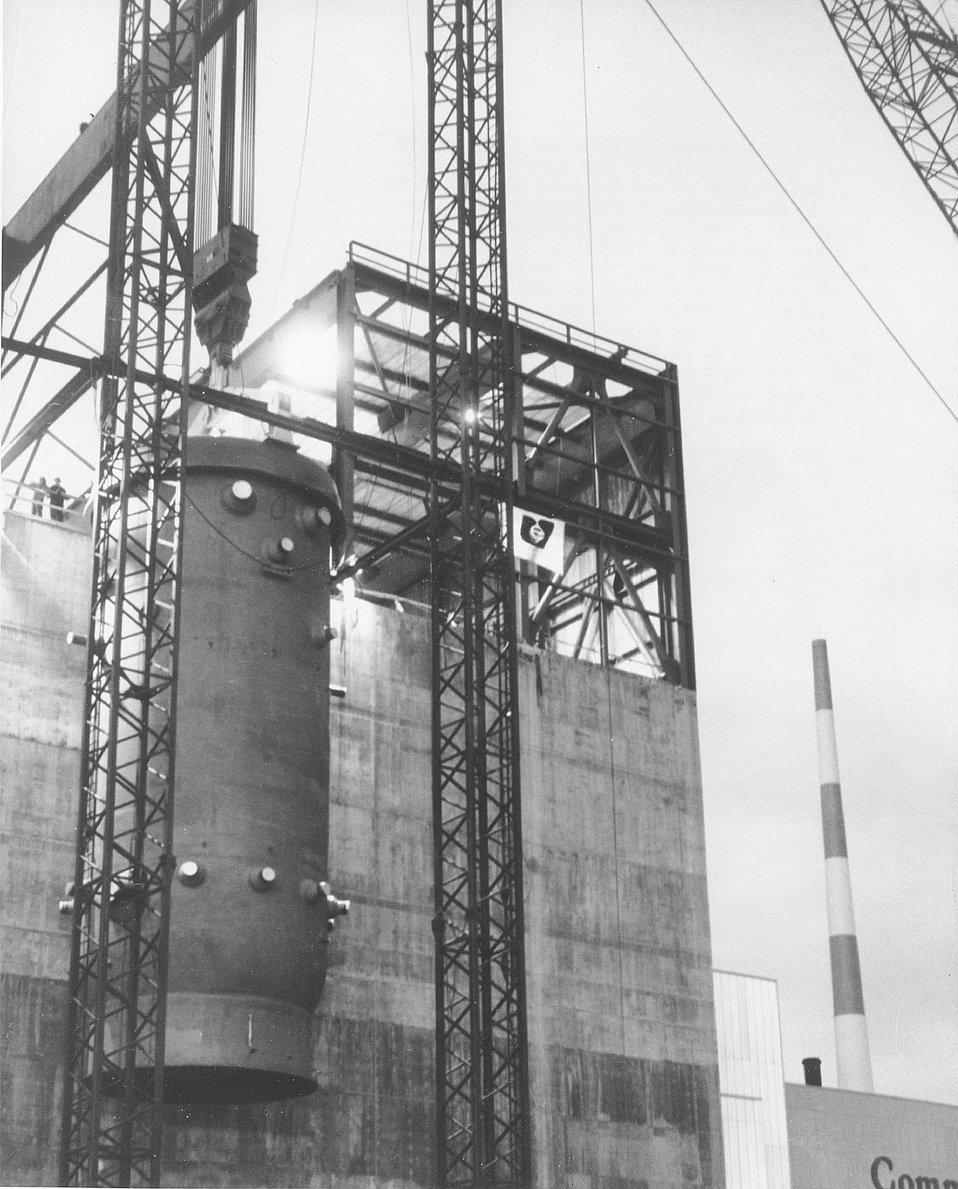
As tall as a 7-story building and weighing 800 tons, the reactor vessel for Dresden 2, a new 809,000 kilowatt generating unit under construction at Commonwealth Edison Company's nuclear power station near Morris, Illinois, was installed over the weekend (12-9-68). Circa 1968.